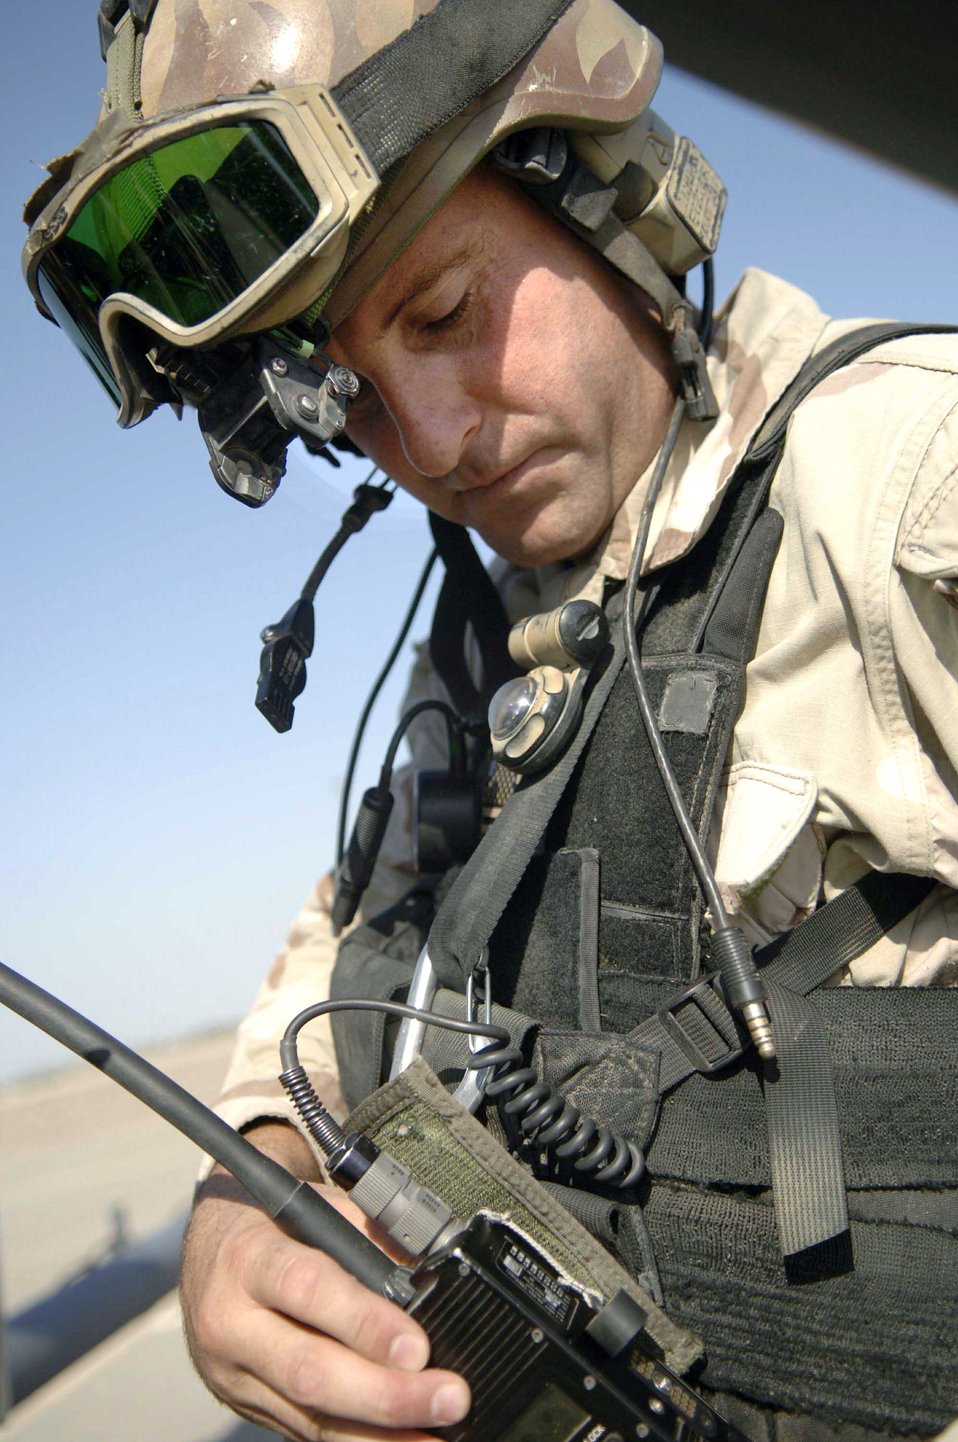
Angel Thunder

Staff Sgt. Patrick Ryan checks his gear prior to flying to Gila Bend, Ariz., on July 25 for rescue training as part of Exercise Angel Thunder. The five-day exercise, held at Davis-Monthan Air Force Base, Ariz., and other areas is designed to provide realistic combat search and rescue training for active-duty, Reserve and Guard Airmen in combat rescue forces. Sergeant Ryan is a pararescueman with the 48th Rescue Squadron.